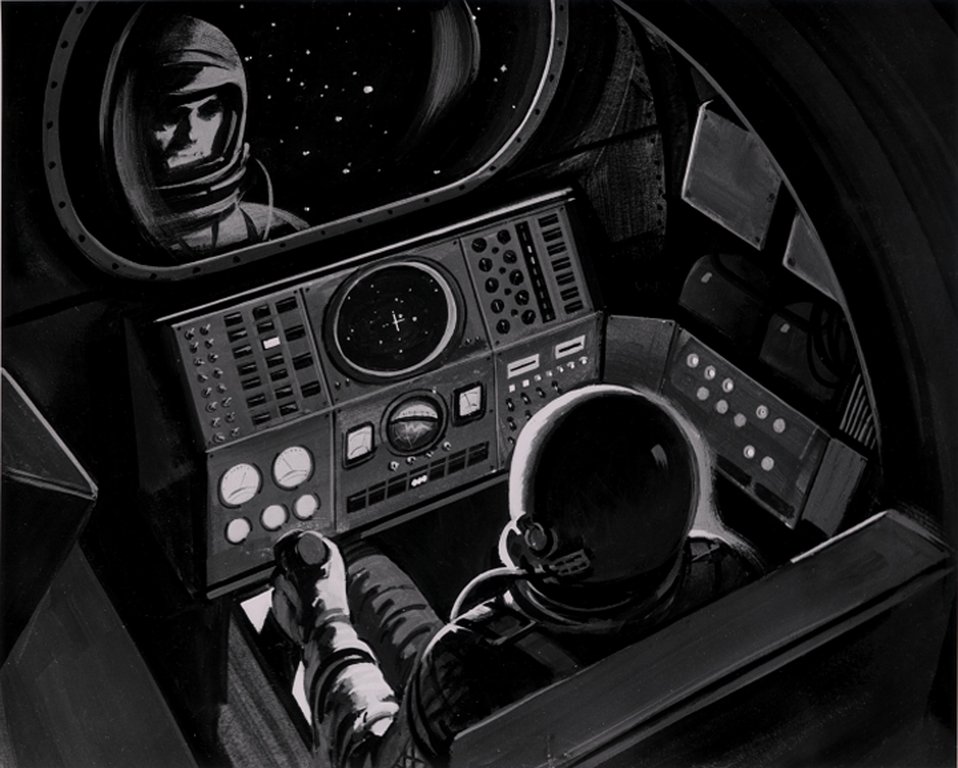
Artist's conception of space exploration depicting manned flight.